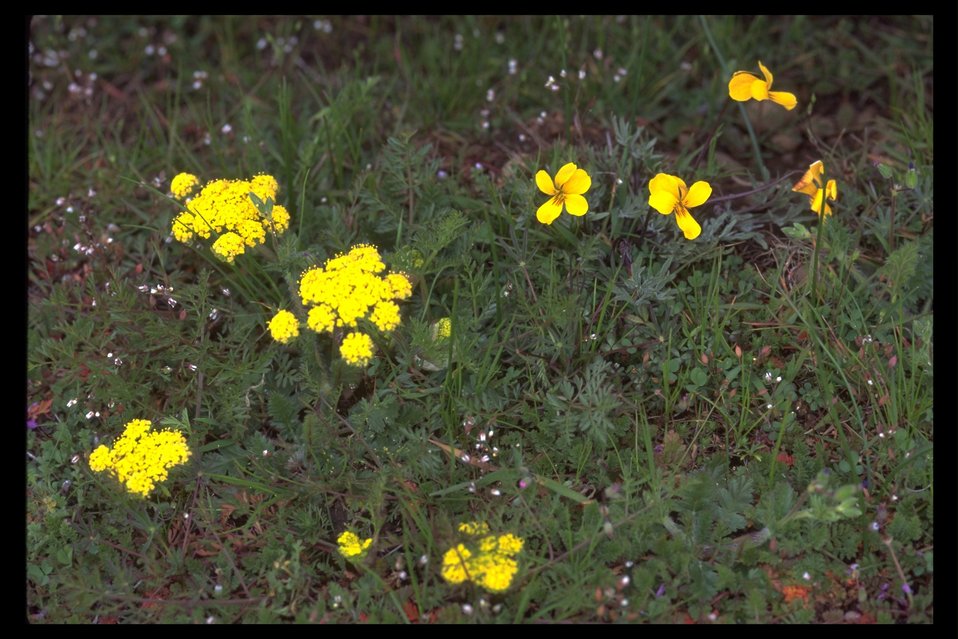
Agate Desert Lomatium, Cook's Desert Parsley (Lomatium cookii).